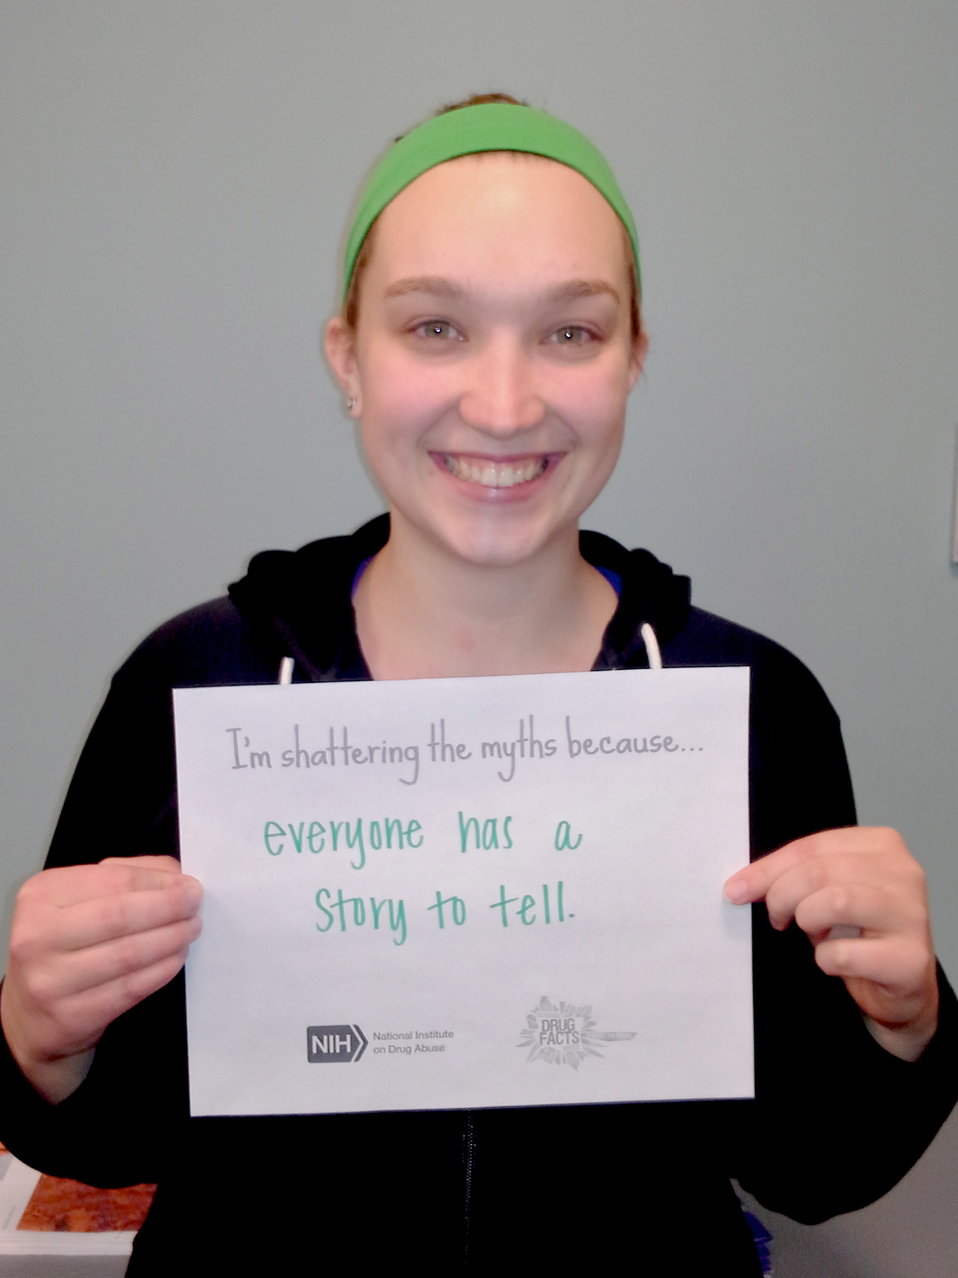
Shattering the Myths campaign in Winona, Minnesota